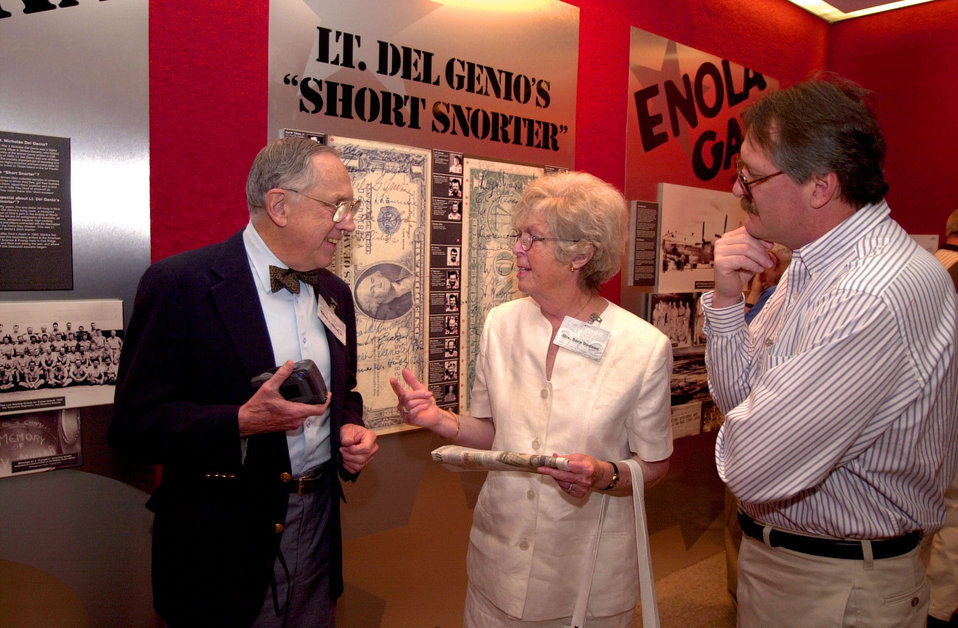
Bill Wilcox talks with vistors at AMSE American Museum of Science and Energy Oak Ridge

00-0099-0027 DOE photo by Lynn Freeny Oak Ridge, Tennessee 6-10-2000